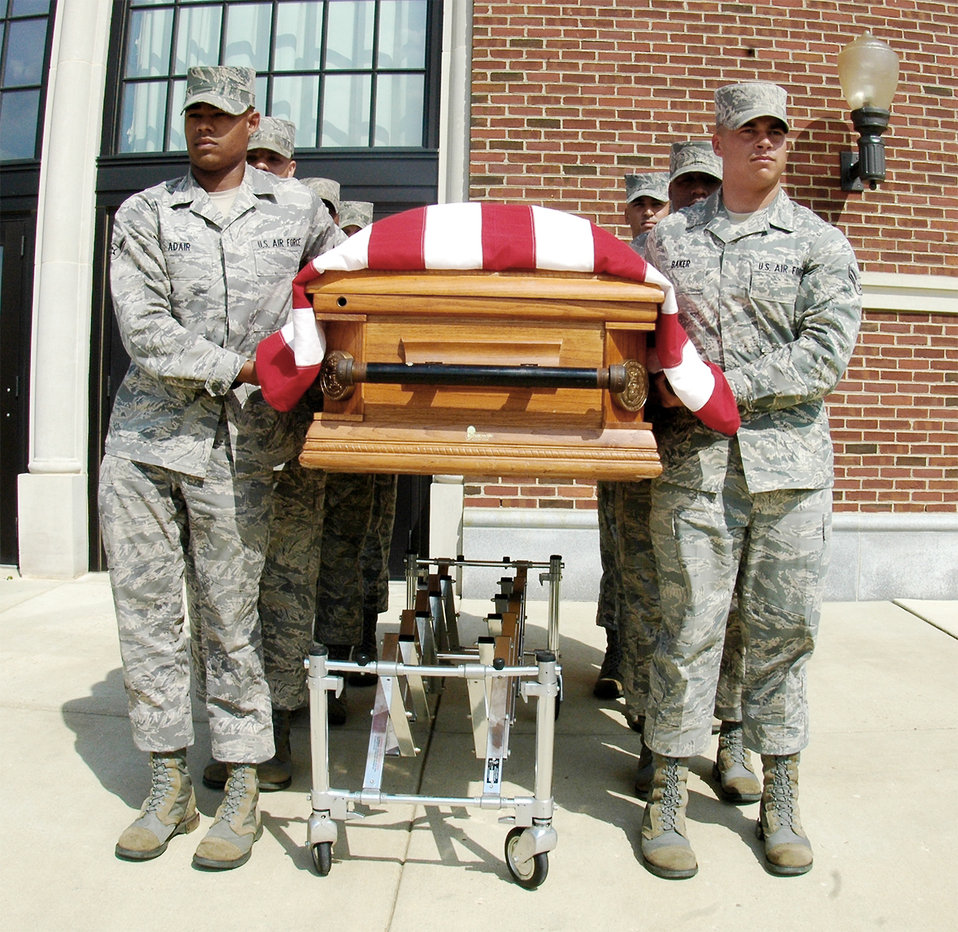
The last to let you down

United States Honor Guard body bearers train with a weighted casket to prepare for funereal duties performed every day. Difficulties faced in training prepare the bearers for the difficulties they will face on the job. As part of the Honor Guard, body bearers represent the United States Air Force and go through a stringent screening process to ensure qualifications for the special duty.